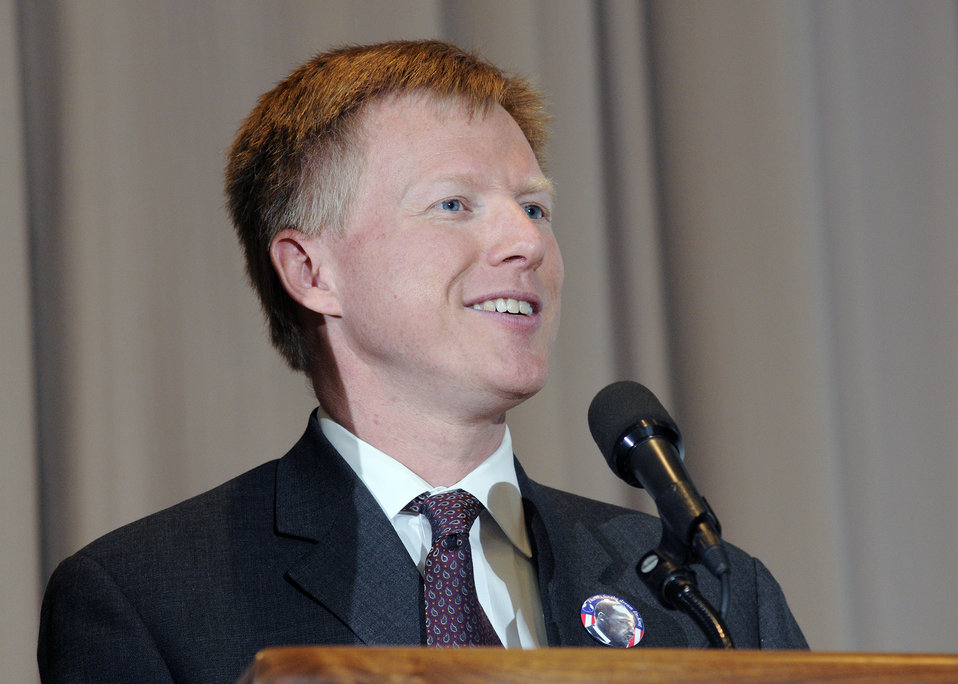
U.S. Department of Agriculture (USDA) Director Faith Based and Neighborhood Partnerships Max Finberg speaks at the USDA Dr. Martin Luther King, Jr. National Service Day presentation of the Drum Major for Service Awards at the USDA Jefferson Auditorium in Washington, D.C. on Tuesday, Jan. 15, 2013.